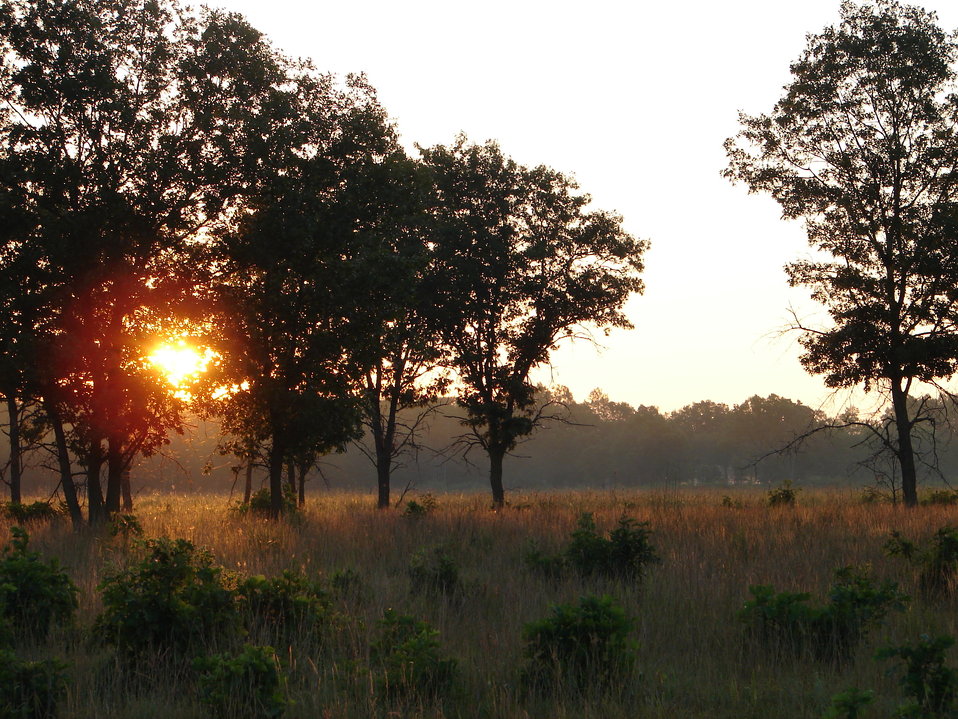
Necedah evening savanna

The sun sets on the savanna at Necedah National Wildlife Refuge in Wisconsin.